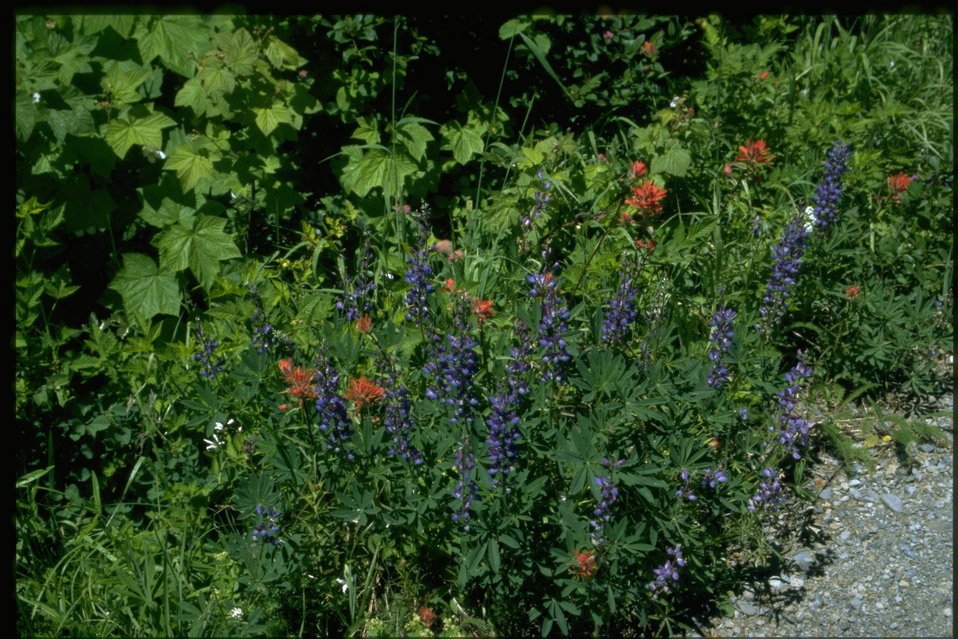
Farshot of Lupinus and Castilleja.